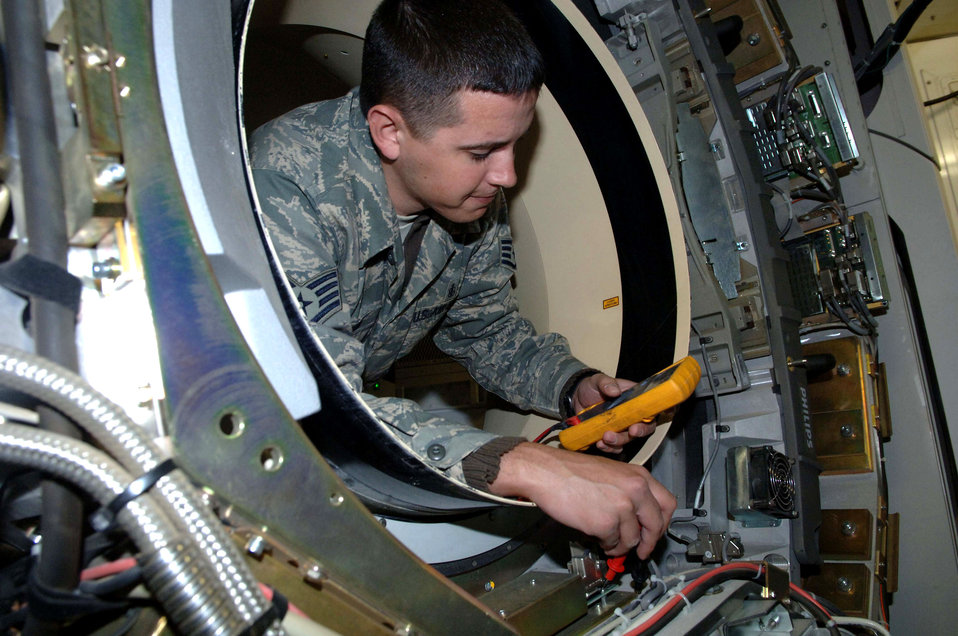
They'll get your motor running

Staff Sgt. Orlando Ortega looks at a multimeter to check the voltage readings inside a computerized tomography machine Dec. 31 at the Air Force Theater Hospital at Balad Air Base, Iraq. The CT machine provides doctors a three dimensional internal image of a patient taken from a series of angles. Biomedical equipment repair technicians here perform repairs, scheduled maintenance, inspections and calibrations on all biomedical equipment. Sergeant Ortega is a 332nd Expeditionary Medical Support Squadron biomedical equipment technician deployed from Barksdale Air Force Base, La.